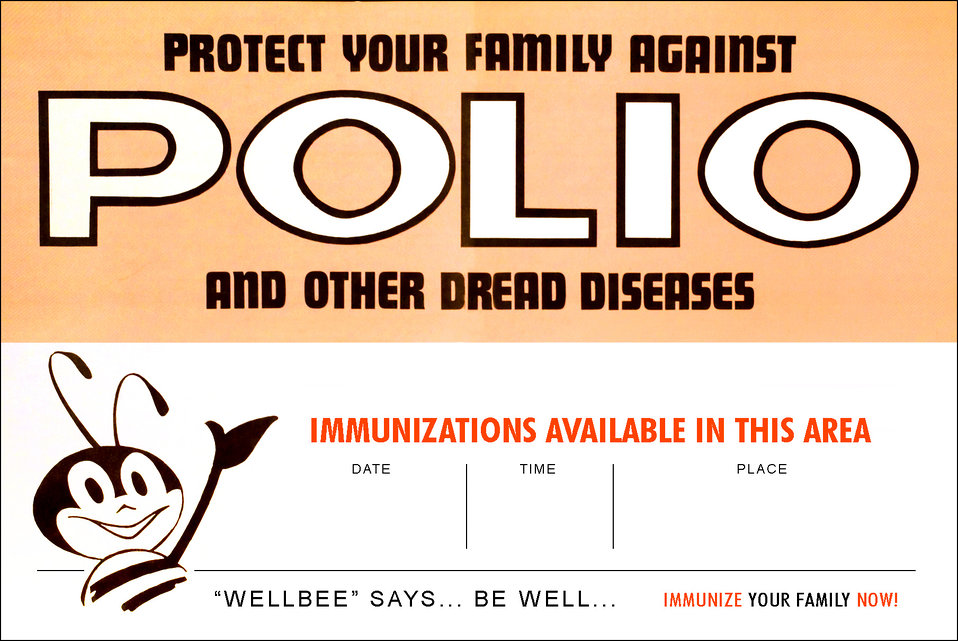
This 1963 poster featured CDC's national symbol of public health, the "Wellbee", and included the date, time and location of where one could receive a vaccination for polio, and other diseases.